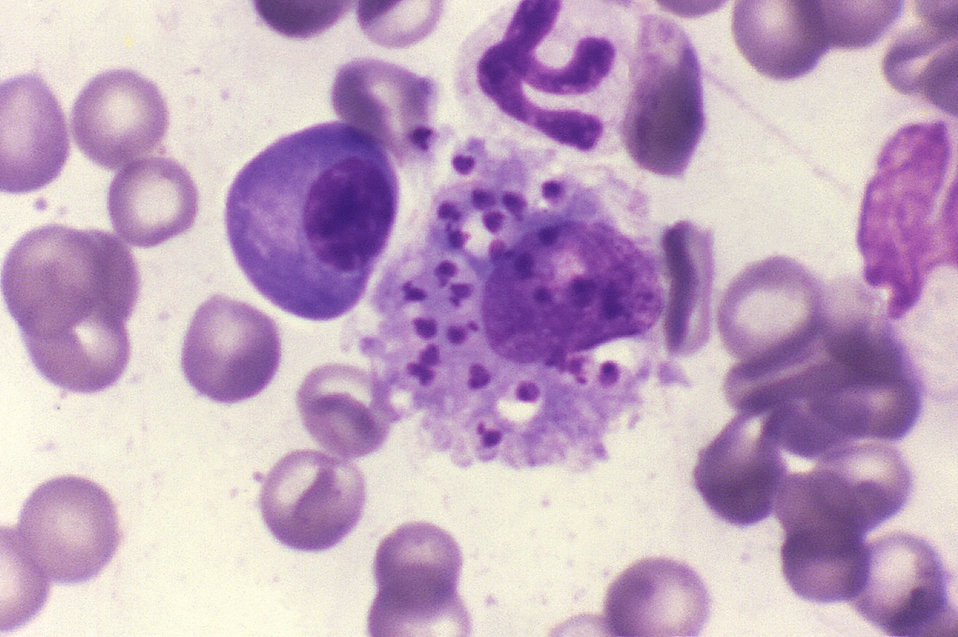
Leishmaniasis in a dog.